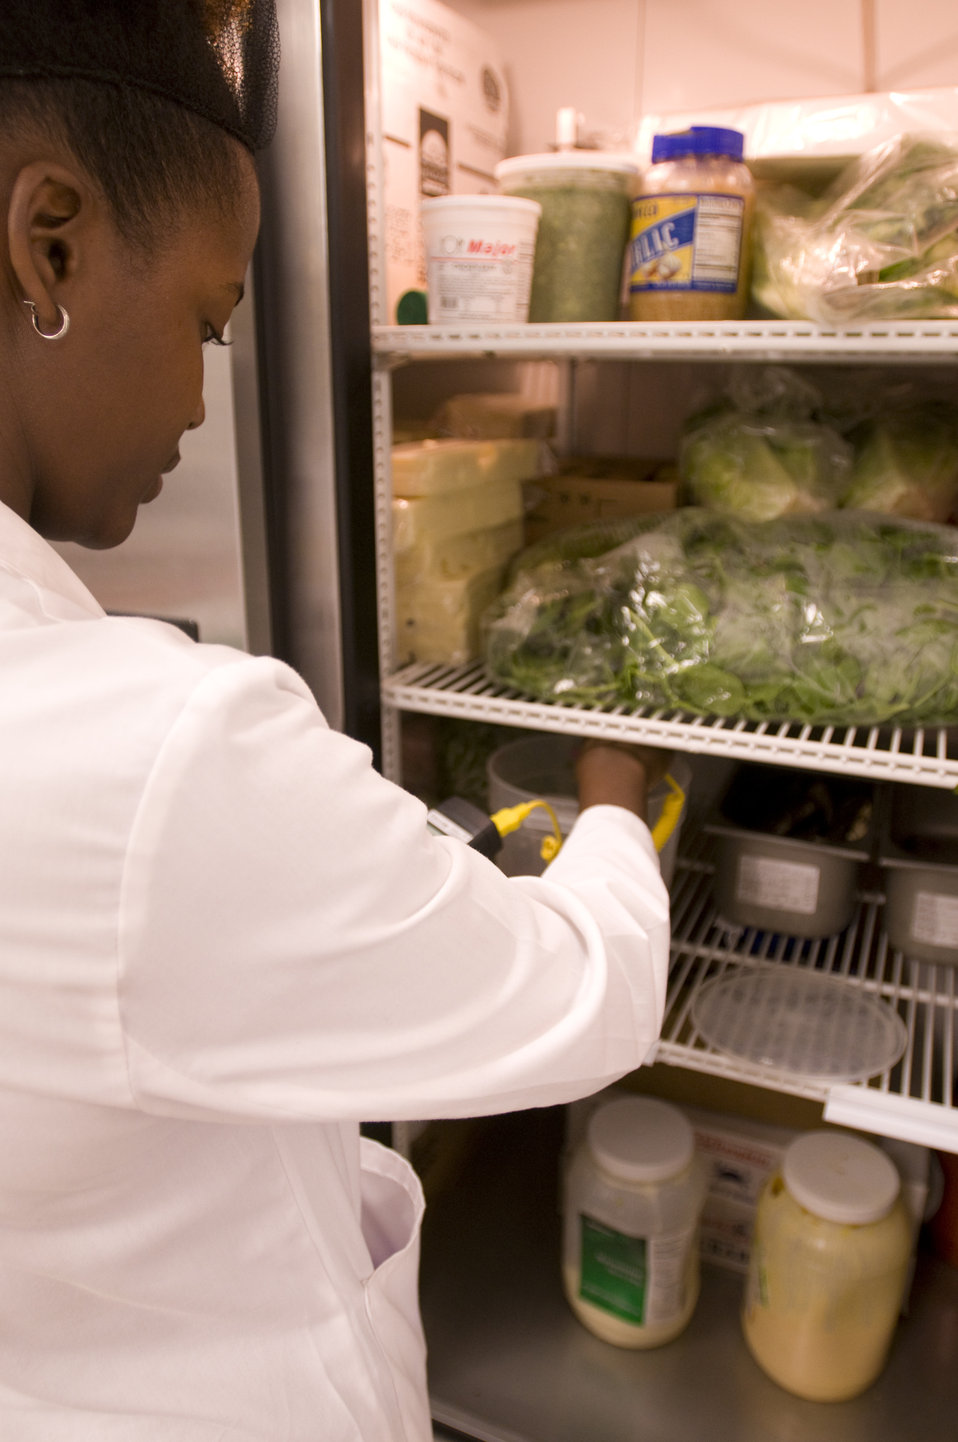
The state-appointed health inspector pictured here at right, was in the process of performing an assessment of this kitchen's sanitary condition. At this point in her inspection, she was taking thermal readings of contents within a refrigerator, using an electronic thermometer.